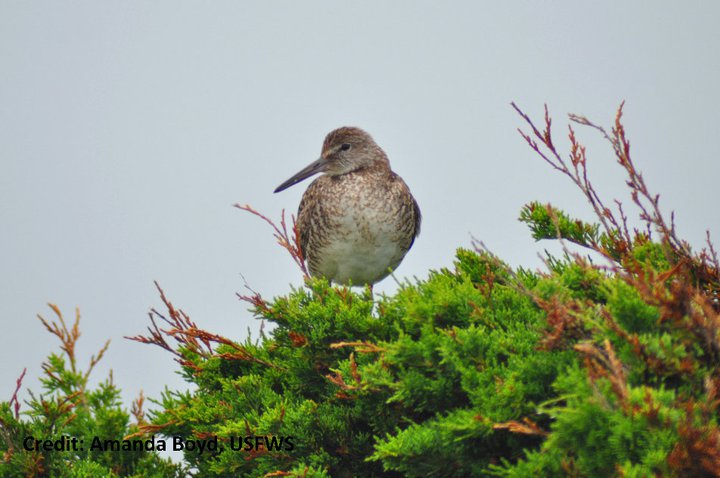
willet

Nantucket National Wildlife Refuge